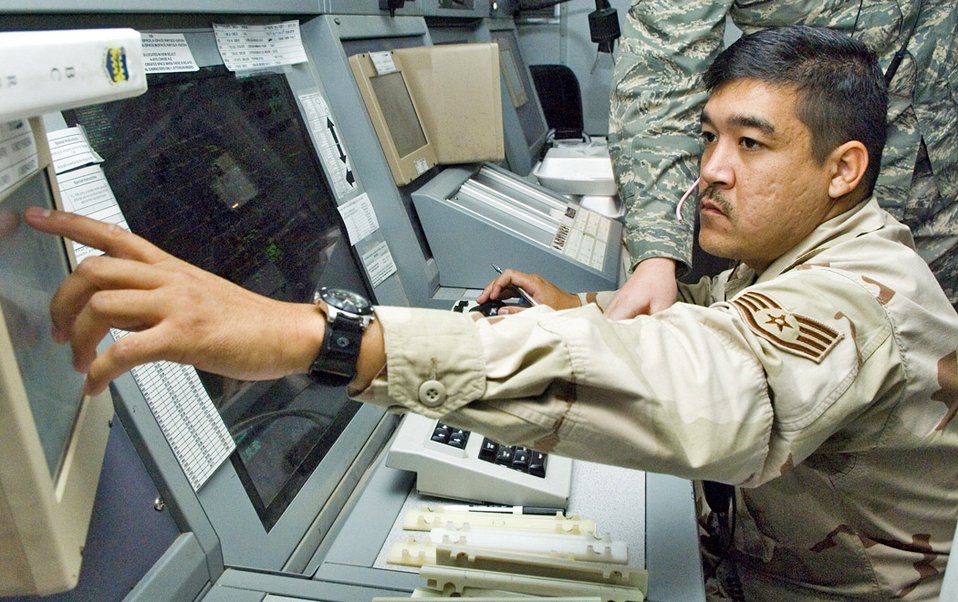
Balad radar air traffic controllers run skies of Iraq

Staff Sgt. Gilbert Lanai uses the enhanced terminal voice switch inside the combined en route radar approach control facility at Balad Air Base, Iraq, to coordinate with adjacent sectors in Iraq. The ETVS is a new addition that allows controllers to touch the screen to talk to someone on a